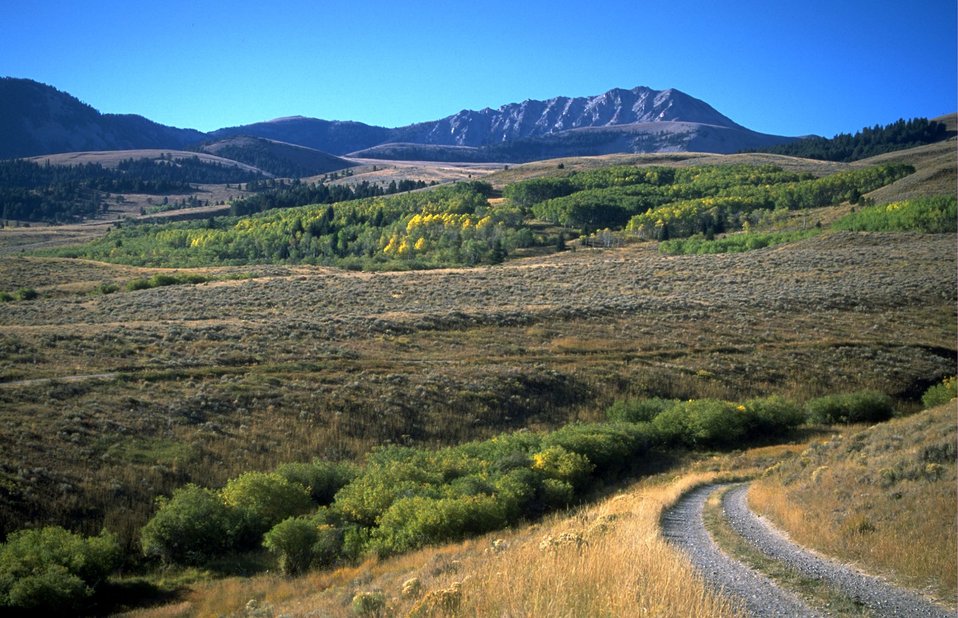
Access road with Baldy Mountain in the distance